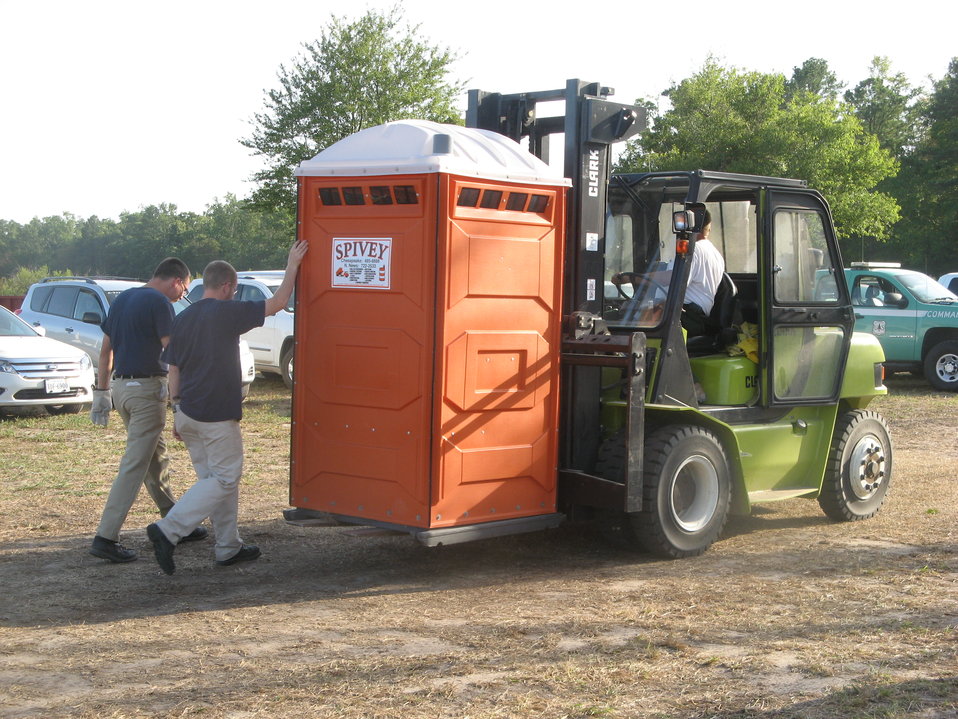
Steady as she goes

Suffolk, VA, August 2011. Workers move an outhouse at the Lateral West Fire Camp to secure it from the oncoming Hurricane Irene Credit: Catherine J. Hibbard/USFWS